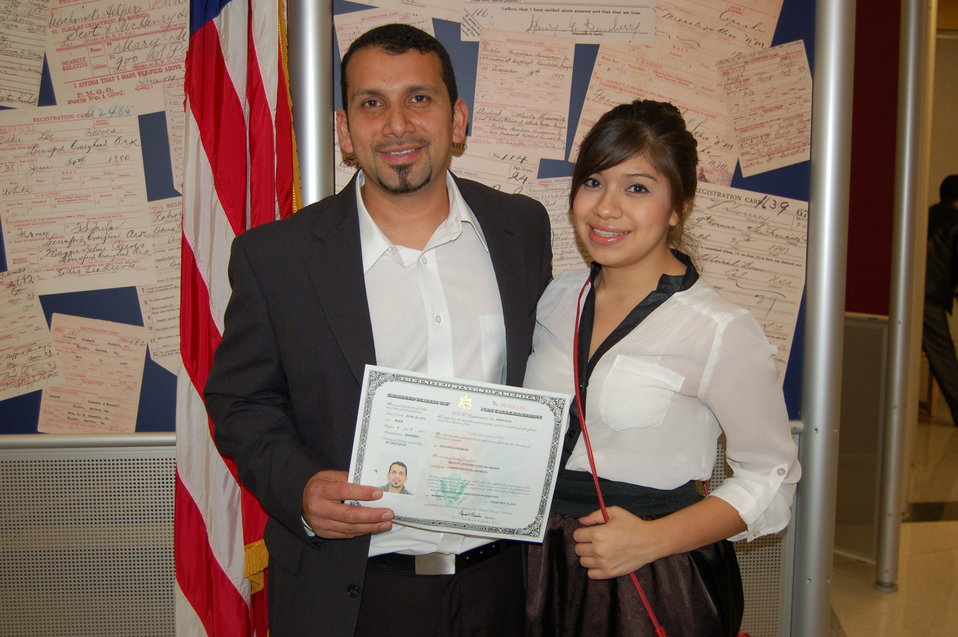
New Citizens